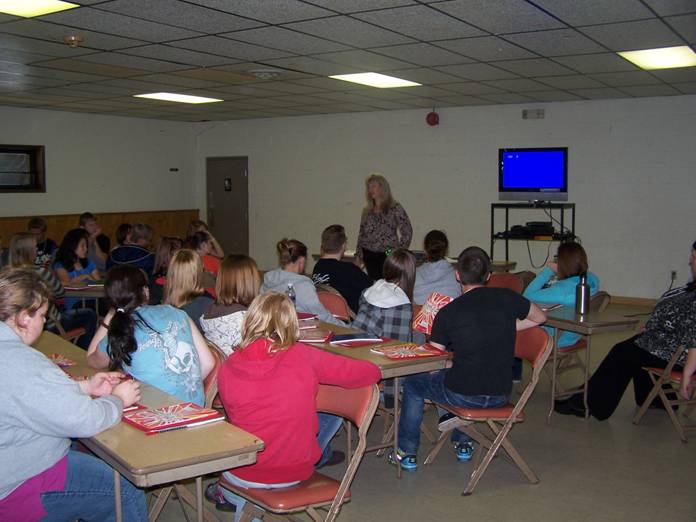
LAUNCH inc. Event in Jackson, OH

Dr. Natasha Slesnick, NIDA Grantee during NDFW and the event hosted by LAUNCH inc. in Jackson, OH